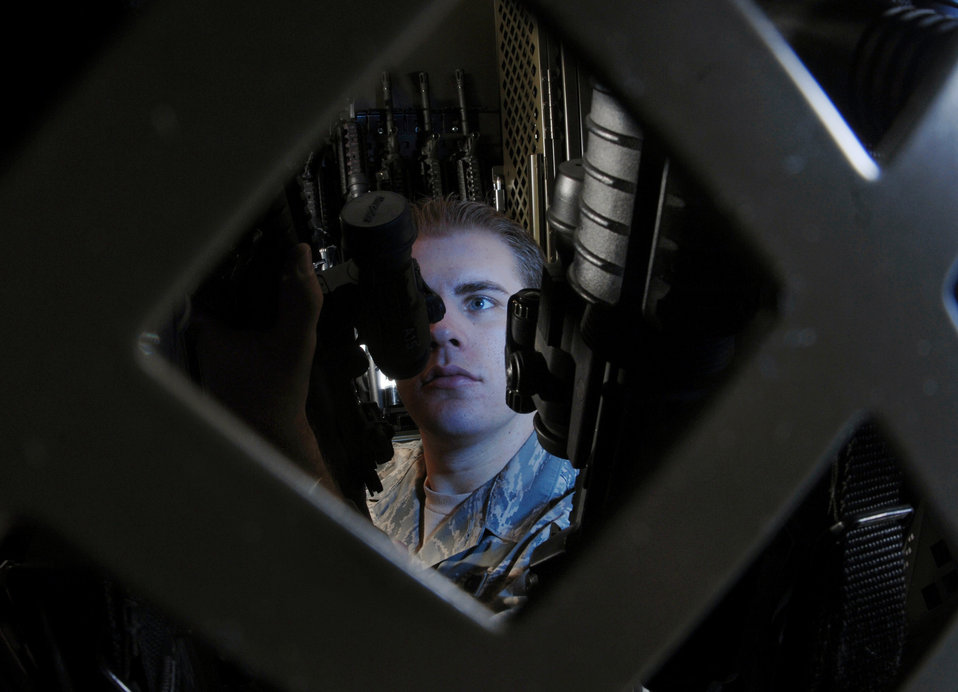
Force protection

Staff Sgt. Andrew Fennell visually inspects the M-68 scope on a 5.56 mm M-4 carbine rifle at the armory at March Air Reserve Base, Calif., on Feb. 28. The 452nd SFS provides force protection programs to include weapon system security, police services, resource protection and antiterrorism for the 452nd Air Mobility Wing at March ARB. They also maintain a wartime and contingency rapid deployment capability to conduct force protection operations worldwide. Sergeant Fennell is an armorer from the 452nd Security Forces Squadron.